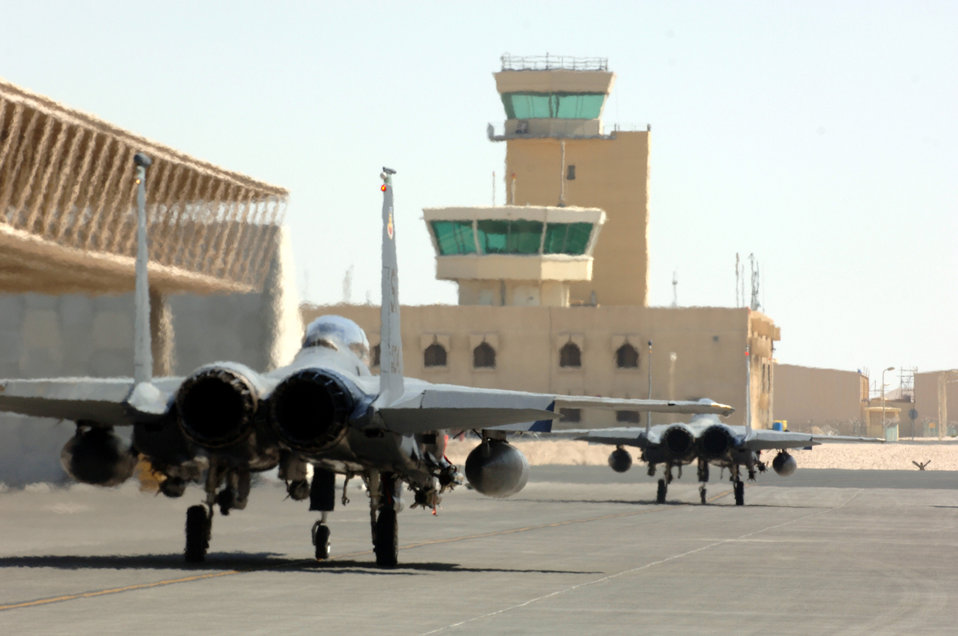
Strike Eagles ready to strike

Two F-15E Strike Eagles from the 336th Expeditionary Fighter Squadron taxi for takeoff Wednesday, March 8, 2006, at a deployed location in southwest Asia. The 336th is home-based at Seymour Johnson Air Force Base, N.C.